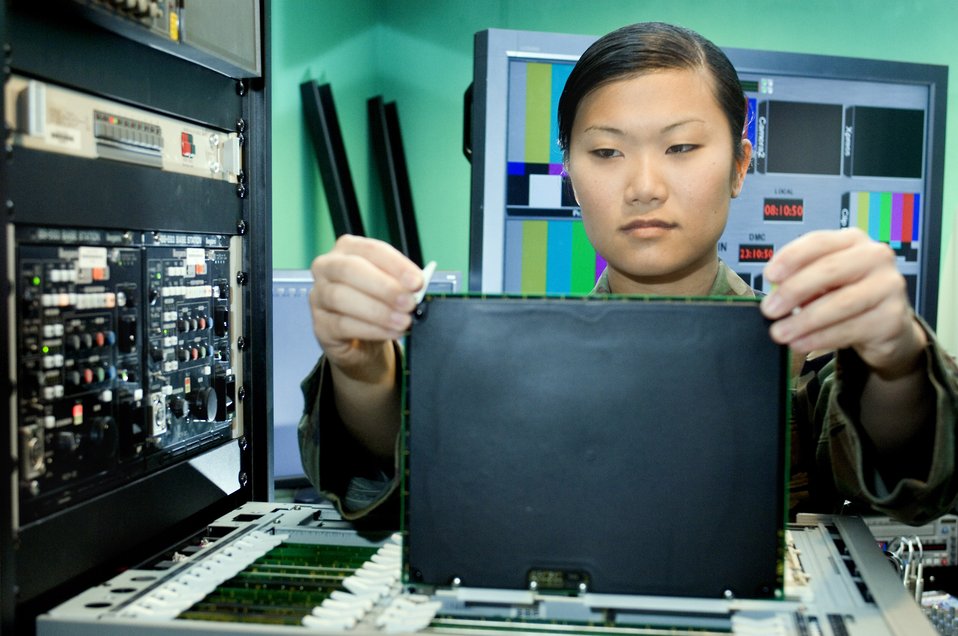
Visual imagery and electronic intrusion specialist

Staff Sgt. Leah Morgan replaces a decoding card on a video recorder at Ramstein Air Base, Germany, on Tuesday, April 18, 2006. Sergeant Morgan was born in South Korea and is now a visual imagery and electronic intrusion specialist with Air Force News repairing and maintaining radio and television broadcast equipment.